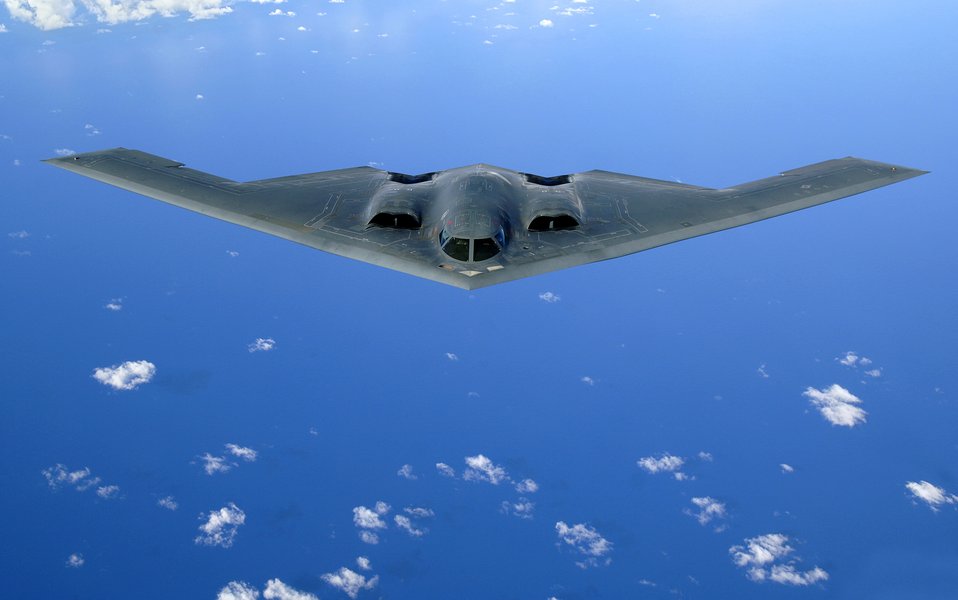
Over the Pacific

A B-2 Spirit soars after a refueling mission over the Pacific Ocean on Tuesday, May 30, 2006. The B-2, from the 509th Bomb Wing at Whiteman Air Force Base, Mo., is part of a continuous bomber presence in the Asia-Pacific region.